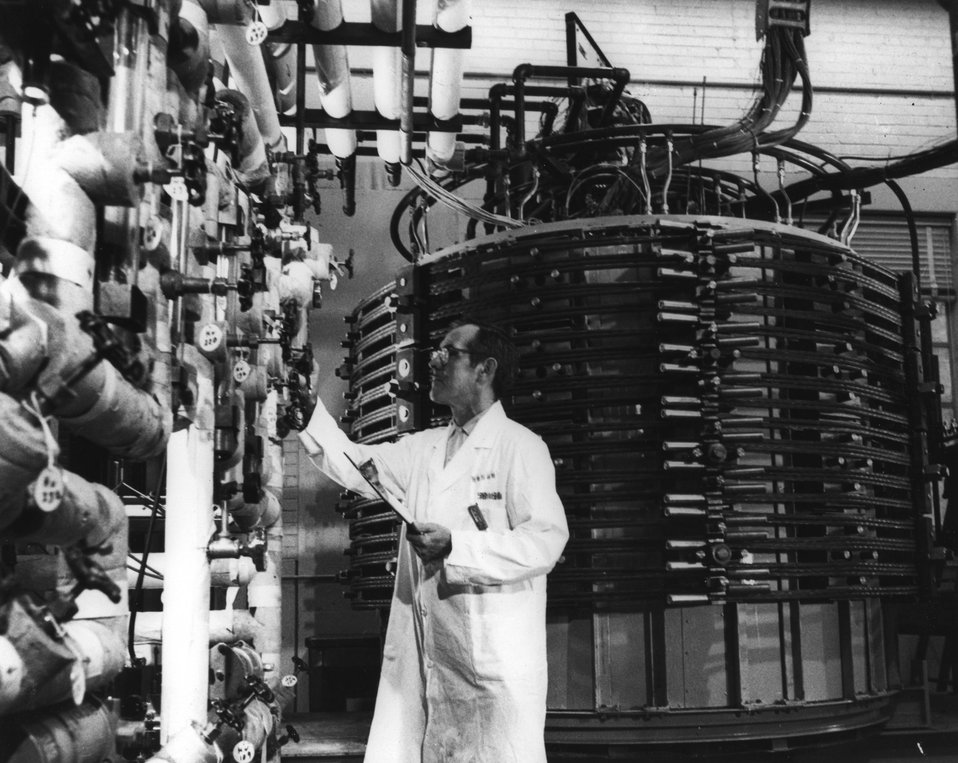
Researchers at the U.S. Atomic Energy Commission's Oak Ridge (Tennessee) National Laboratory are using this experimental equipment to investigate the possibility for using pre-stressed concrete in the fabrication of pressure vessels for gas-cooled reactors. c. 1972